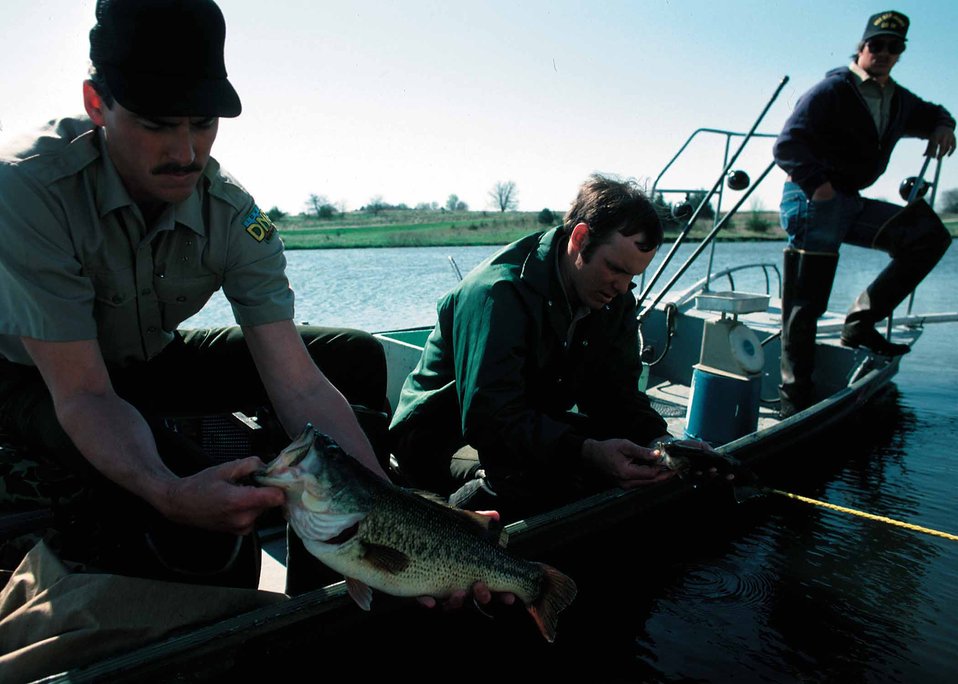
Fish shocking in Green Valley Lake in Union County.